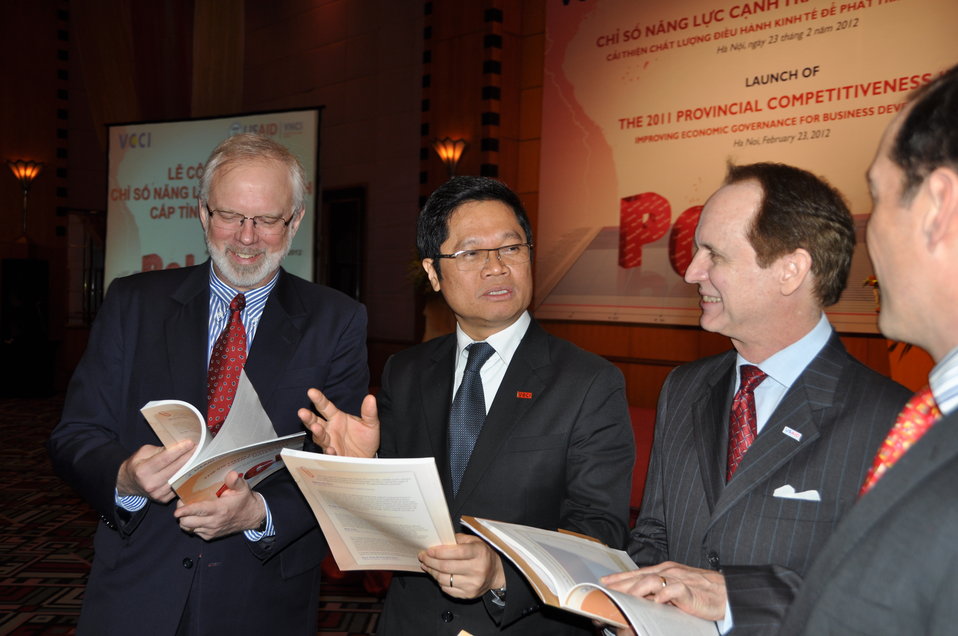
U.S. Ambassador David B. Shear at the Provincial Competitiveness Index 2011 Launch